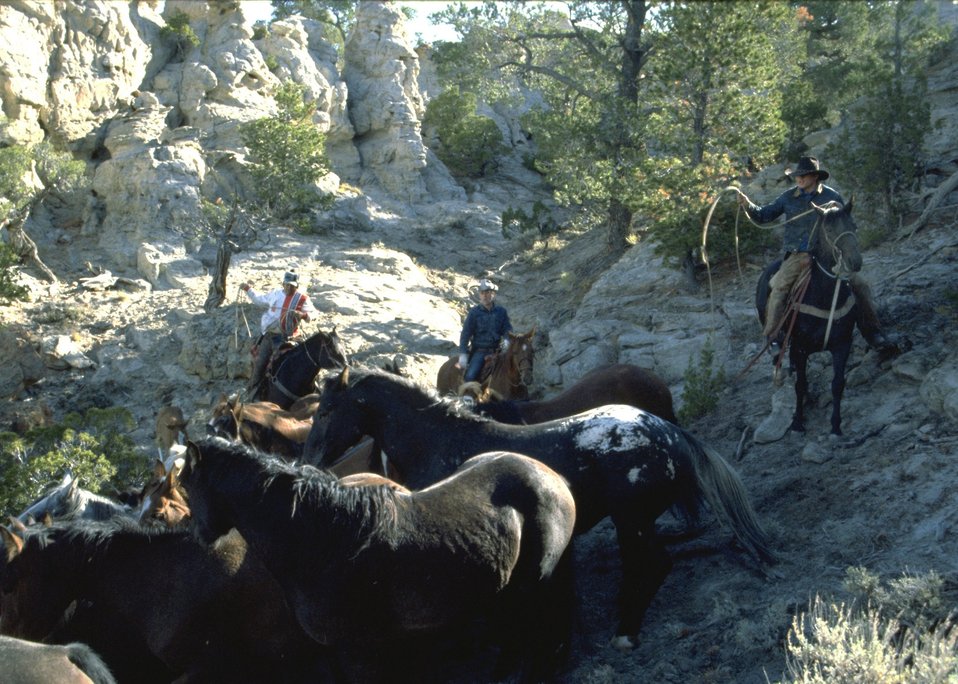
Wild horses.